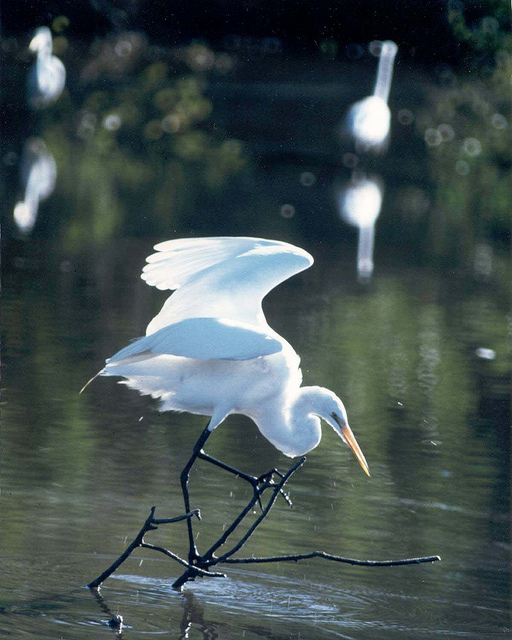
great egret

Prime Hook National Wildlife Refuge